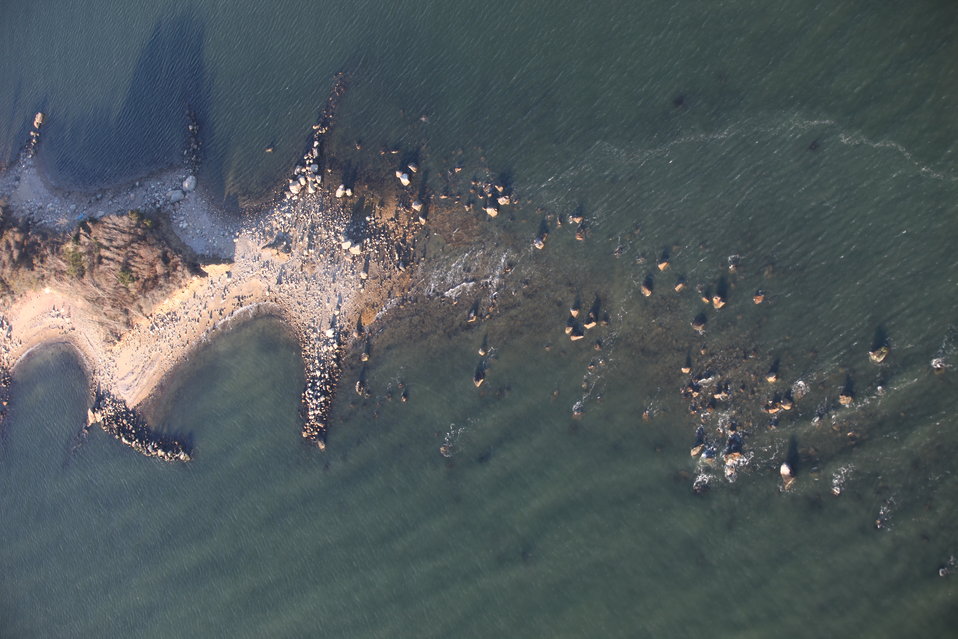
Stewart B. McKinney National Wildlife Refuge-Duck Island (CT)

An aerial view of Duck Island at the Stewart B. McKinney National Wildlife Refuge in the aftermath of storm Sandy.